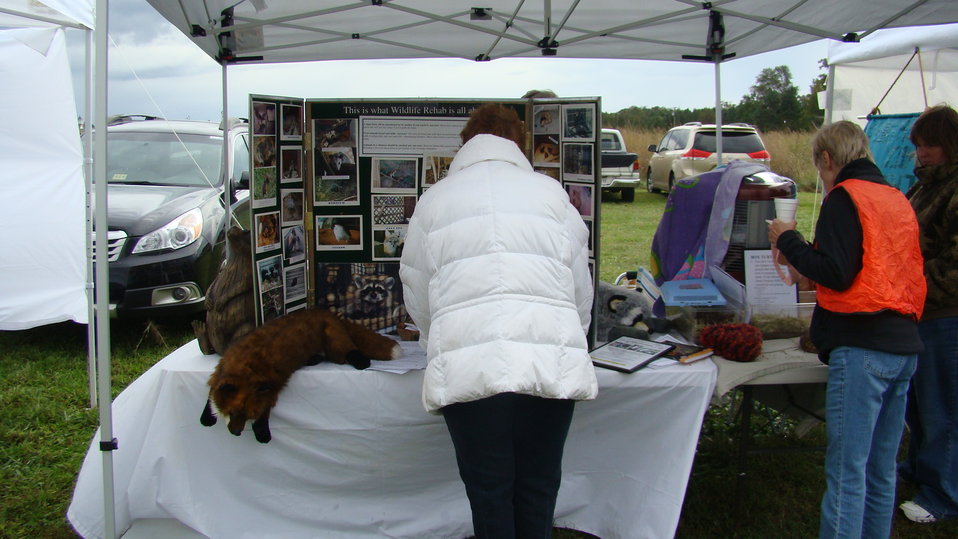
Rappahannock River Valley NWR 15th Anniversary

Wildbunch Wildlife Refuge display at 'Go Wild!'